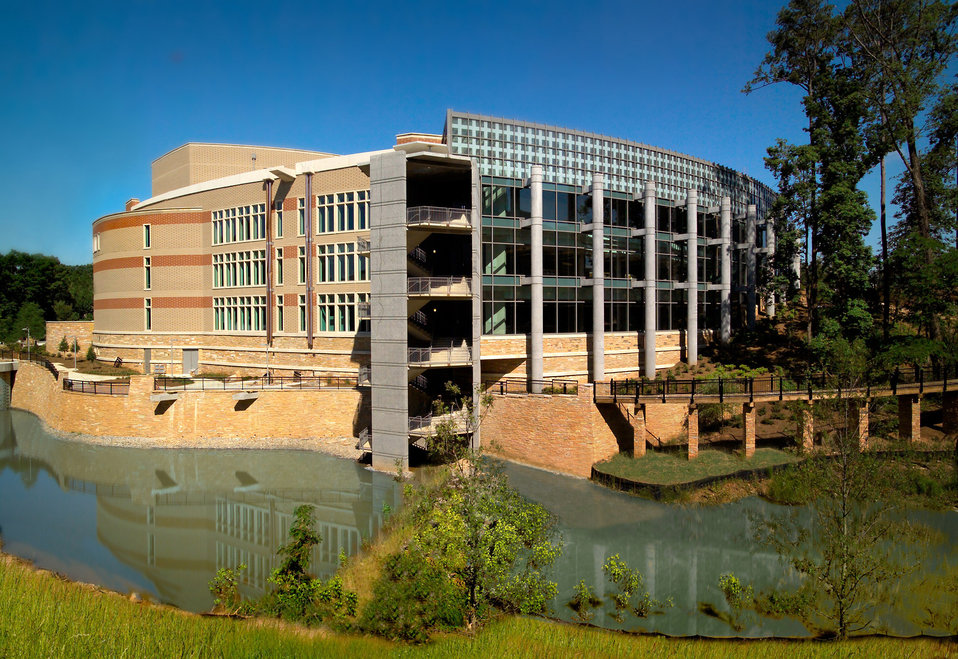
Captured by James Gathany, Centers for Disease Control's biomedical photographer, this 2006 image depicted the exterior of the new "Tom Harkin Global Communications Center", otherwise known as Building 19, located on the organization's Roybal Campus in Atlanta, Georgia. The facility houses the CDC's Information Center/Library, auditoria and meeting halls, which are used to accommodate in-house staff meetings, and national/international conferences hosted by the CDC, and the National Center for Health Marketing's, Division of Creative Services, which includes a full service television broadcast facility.